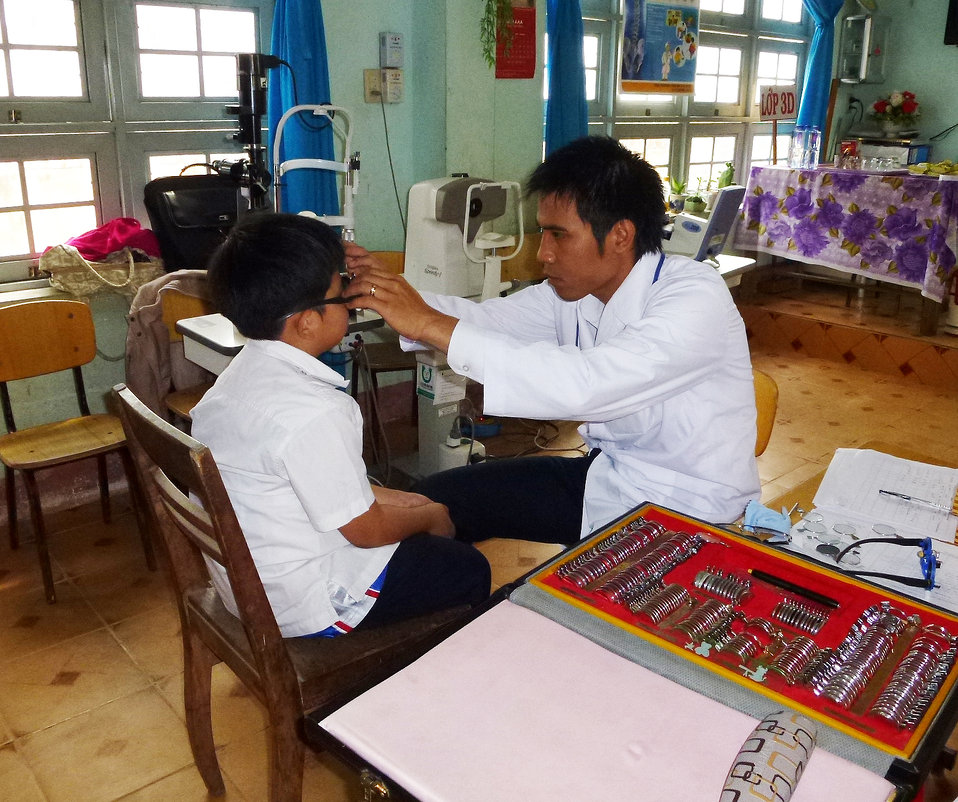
Eye screening at Phan Dinh Phung Primary School

USAID and HKI support refractive error screening examination for students at Phan Dinh Phung Primary School in Kon Tum.